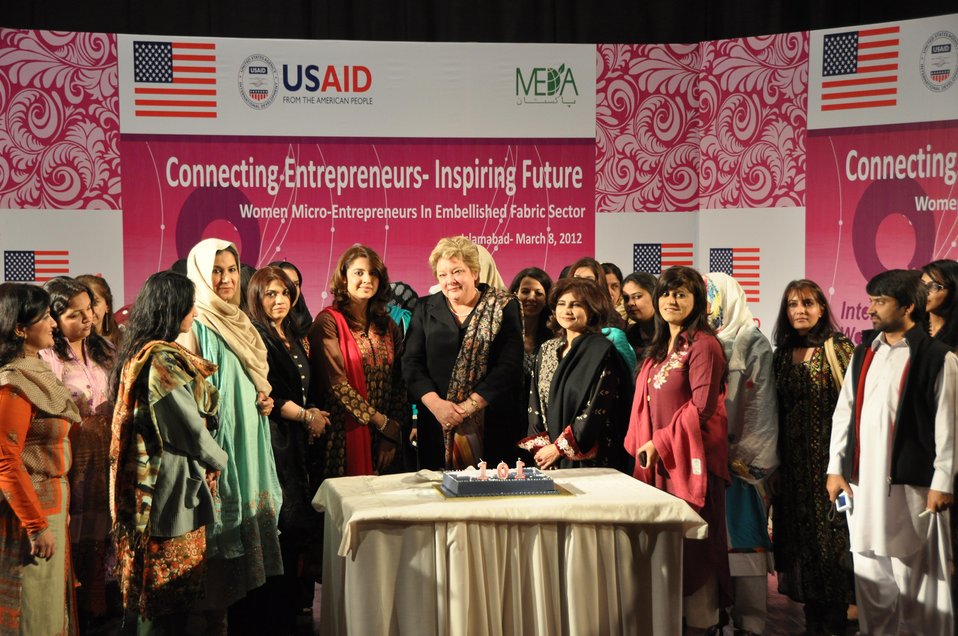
International Women’s Day

Islamabad, March 08, 2012 - The United States Agency for International Development (USAID) celebrated International Women’s Day, hosting a panel discussion with women entrepreneurs.
Panel members in addition to USAID’s
- Karen Freeman
- Wajeeha Nasreen, Sr. Product Development Manager, Gul Ahmed (famous Pakistani fabric brand)
- Dr. Nosheen, CEO, Generations (famous clothing brand)
- Razia Zubairi, Director General, Technical Education and Vocational Training Authority, Punjab
- Shaheen Khan, Sales Agent, ECDI, USAID sub-grantee